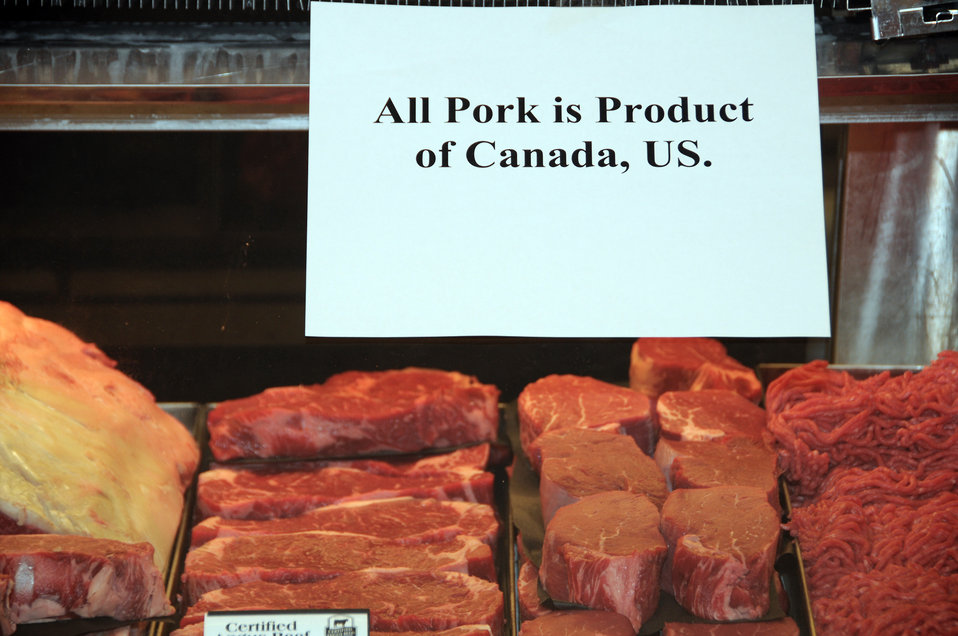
This is an example of a Country of Origin label (COOL) at a grocery market in Maryland on April 20, 2009.